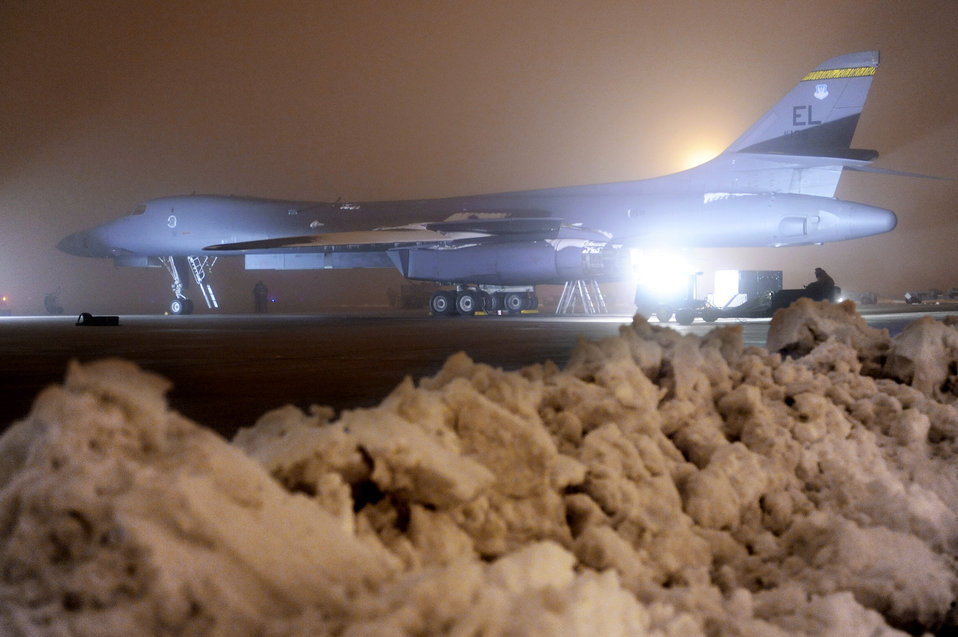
Ellsworth Airmen join Odyssey Dawn

Airmen from the 28th Aircraft Maintenance Squadron prepare a B-1B Lancer March 27, 2011, at Ellsworth Air Force Base, S.D., to support Operation Odyssey Dawn. Their work was made difficult by severe weather conditions including snow, ice, and freezing fog.